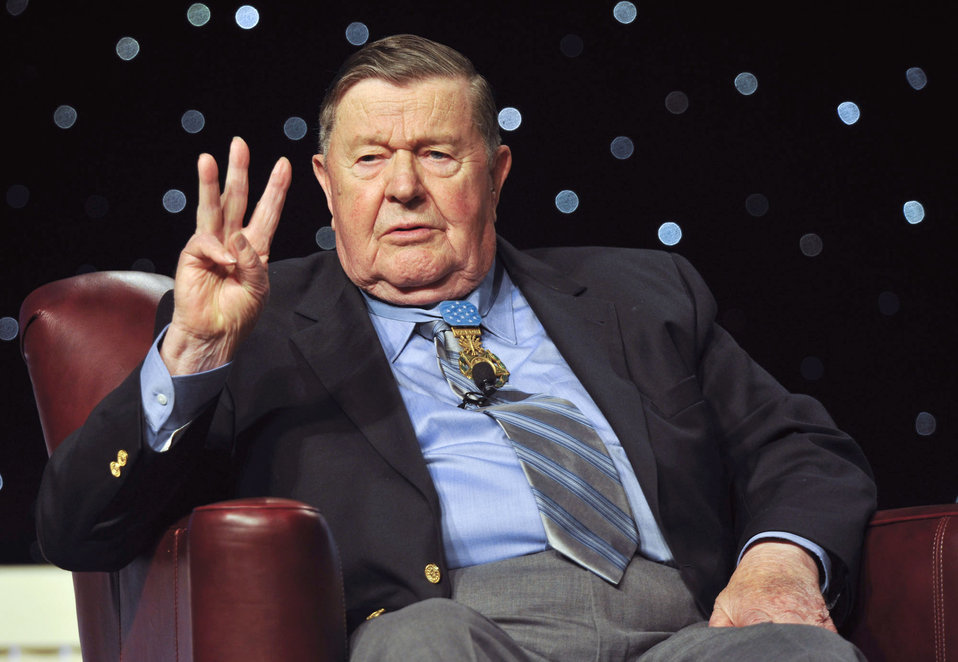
Medal of Honor recipients

Retired Col. Joe Jackson, a Medal of Honor recipient, participated in a question and answer session Sept. 15, 2010, at the Air Force Association annual Air and Space Conference and Technology Exposition at National Harbor, in Oxon Hill, Md. Colonel Jackson is seen responding to a question about his philosophy on what leadership traits were most important to him throughout his career.